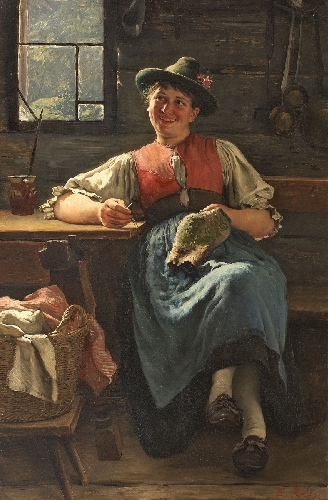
Bauernstube mit junger Frau beim Nähen. Signiert und datiert unten rechts: E. Rau 89. Öl auf Leinwand. 74 x 48 cm.